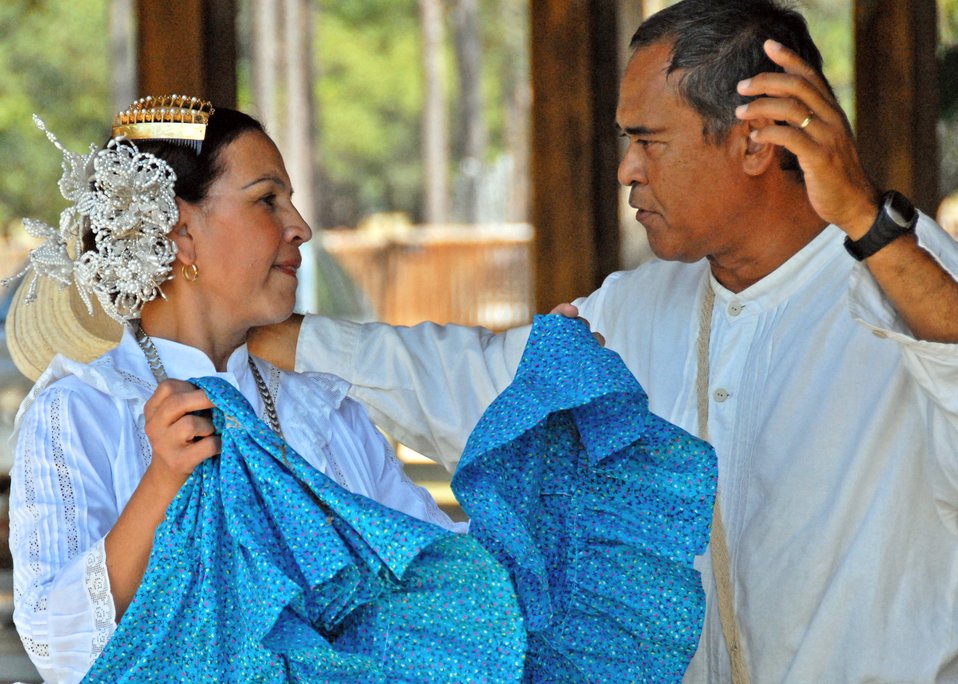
Hispanic Heritage Month kicks off

Indrany and Ted Pabo perform an authentic Panamanian dance during the Hispanic Heritage Month kick-off event Sept. 14, 2010, at Eglin Air Force Base, Fla.